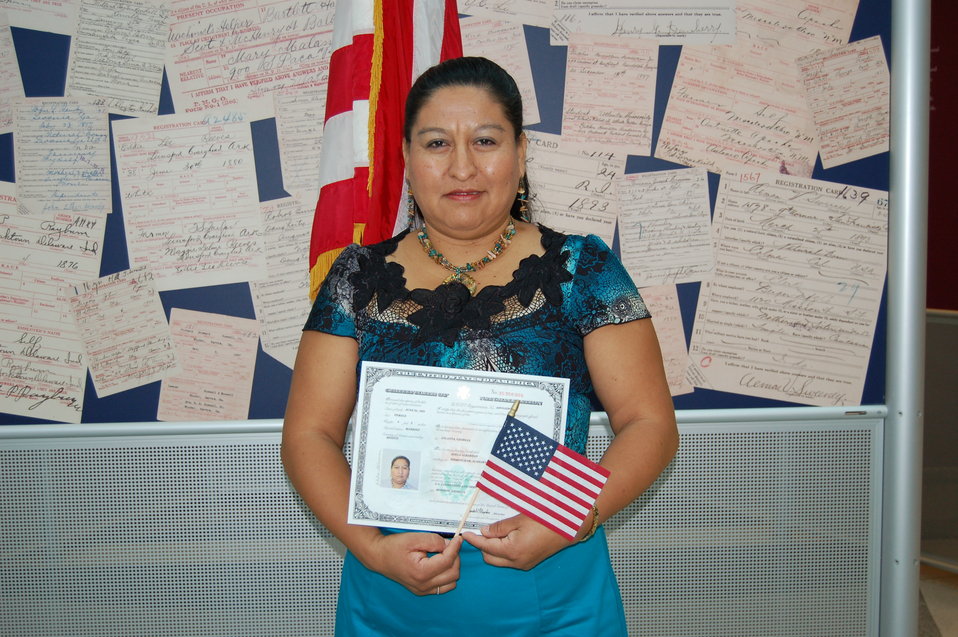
New Citizens